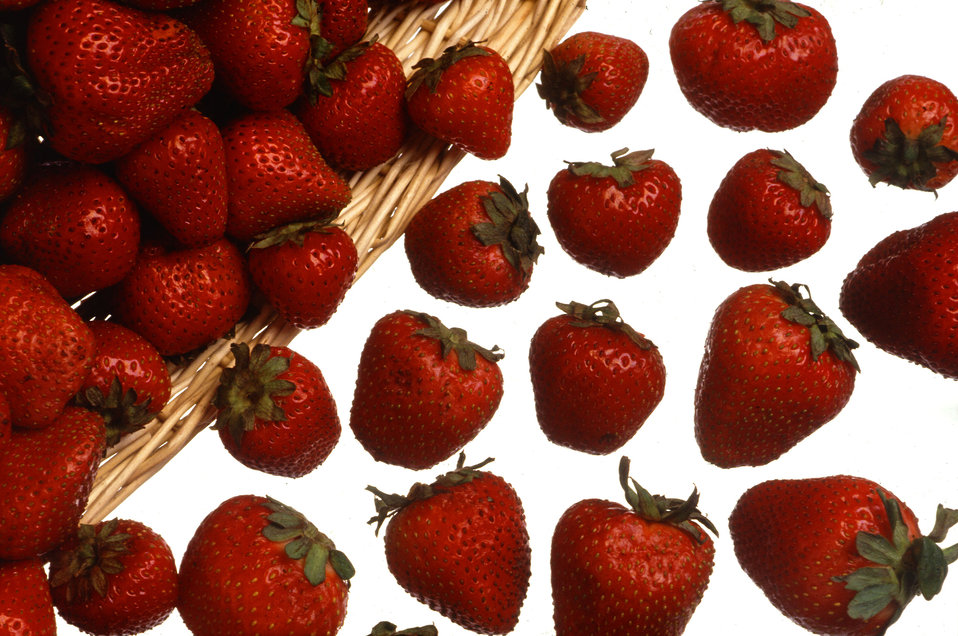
Sweet, juicy strawberries not only taste good, they're also full of nutrition, low in calories and carbohydrates, and the raw fruit is a good source of fiber, potassium, iron, and vitamin C.